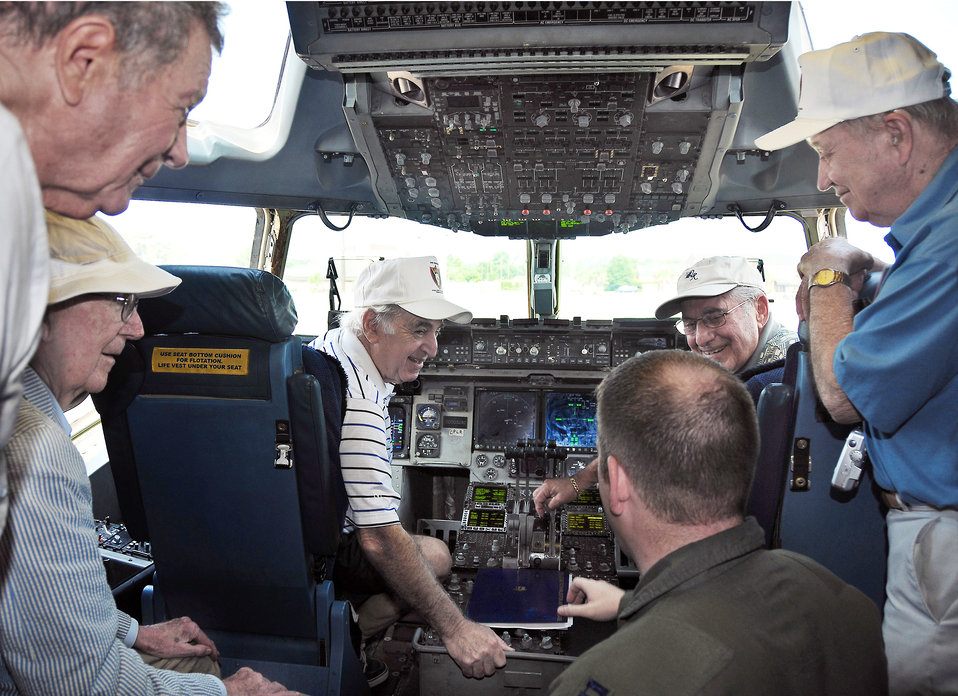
World War II vets share wartime stories with Charleston Airmen

Capt. Ryan Daugherty explains the inner workings of a C-17 Globemaster III to a group of World War II veterans June 29 at Charleston Air Force Base, S.C. The veterans were pilots and ground crewmembers from the 493rd Fighter Squadron. Captain Daugherty is a pilot with the 16th Airlift Squadron.